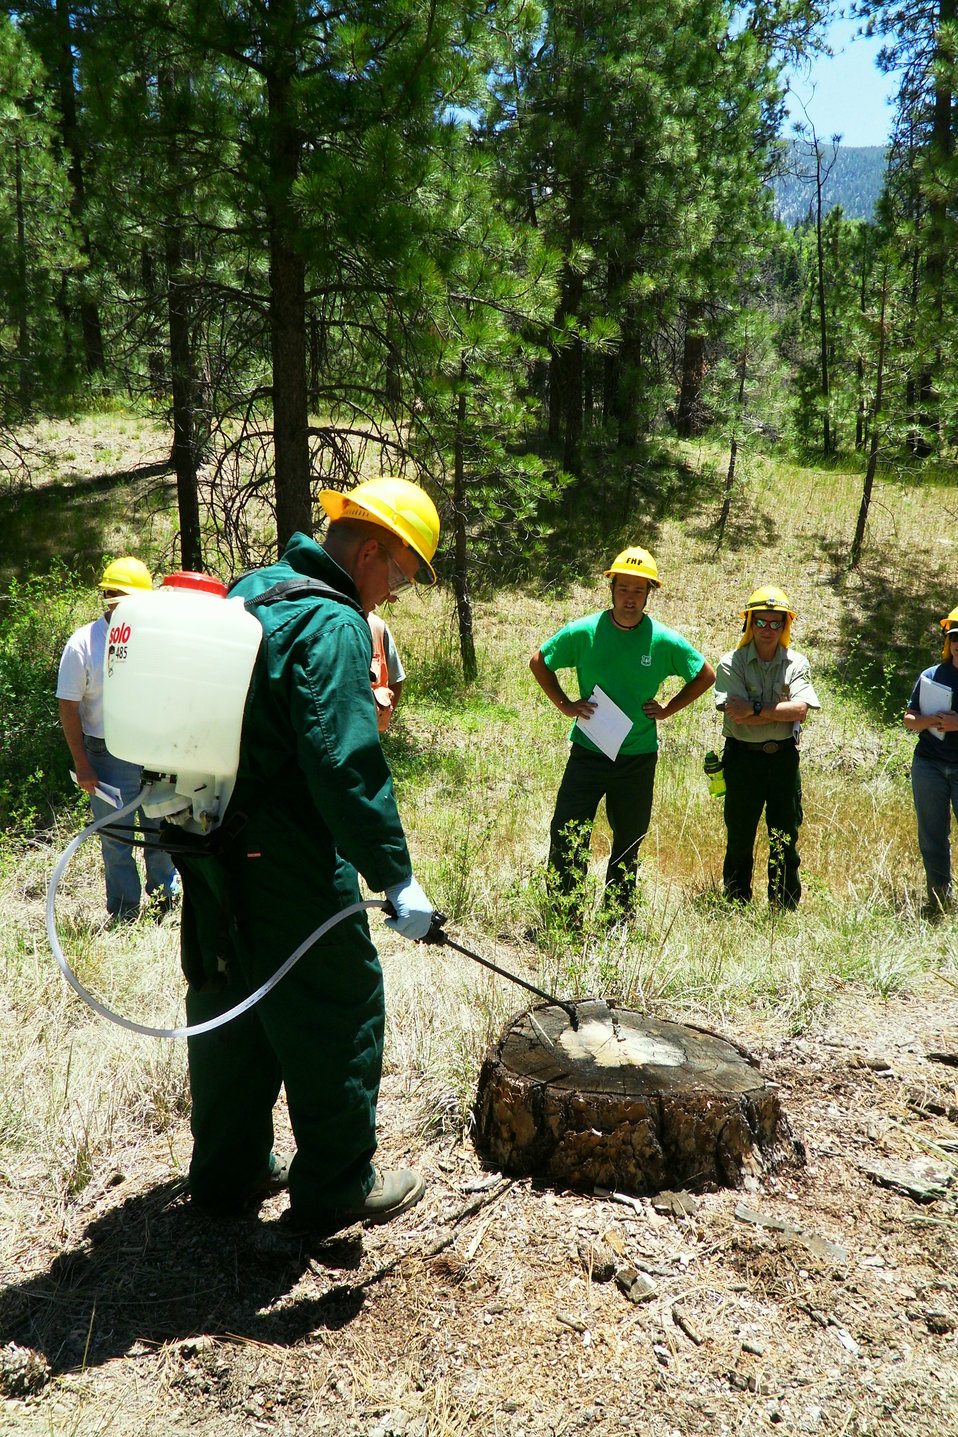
fhp5

U.S. Forest Service pesticide use specialist and Invasive Plants Program manager David Bakke demonstrates how to treat a stump to prevent root disease infection.